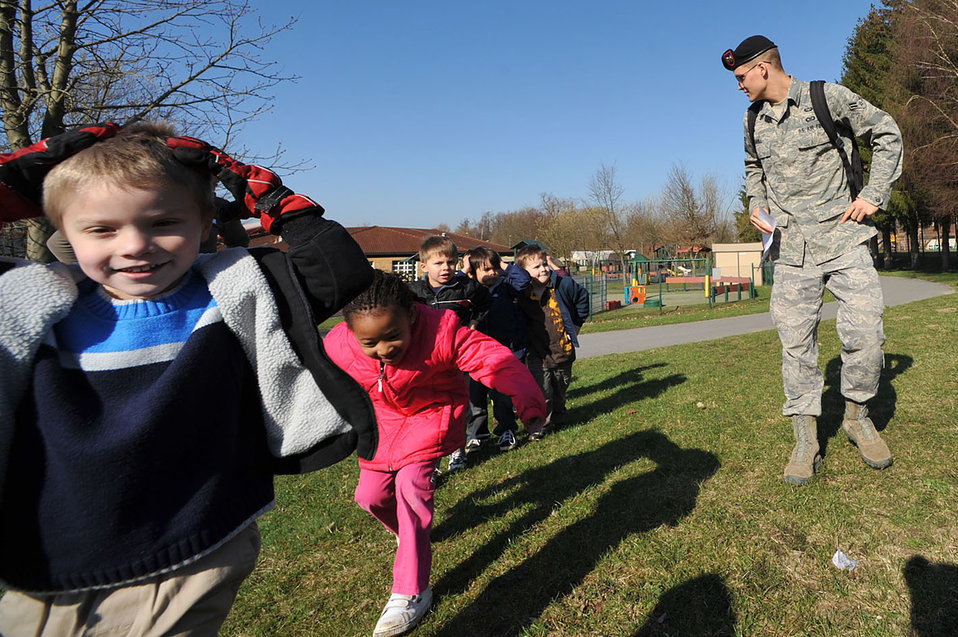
Ramstein Airmen provide 'boot camp' for military children

Airman 1st Class Brian Crabill leads a group of children on a run during the child development center's